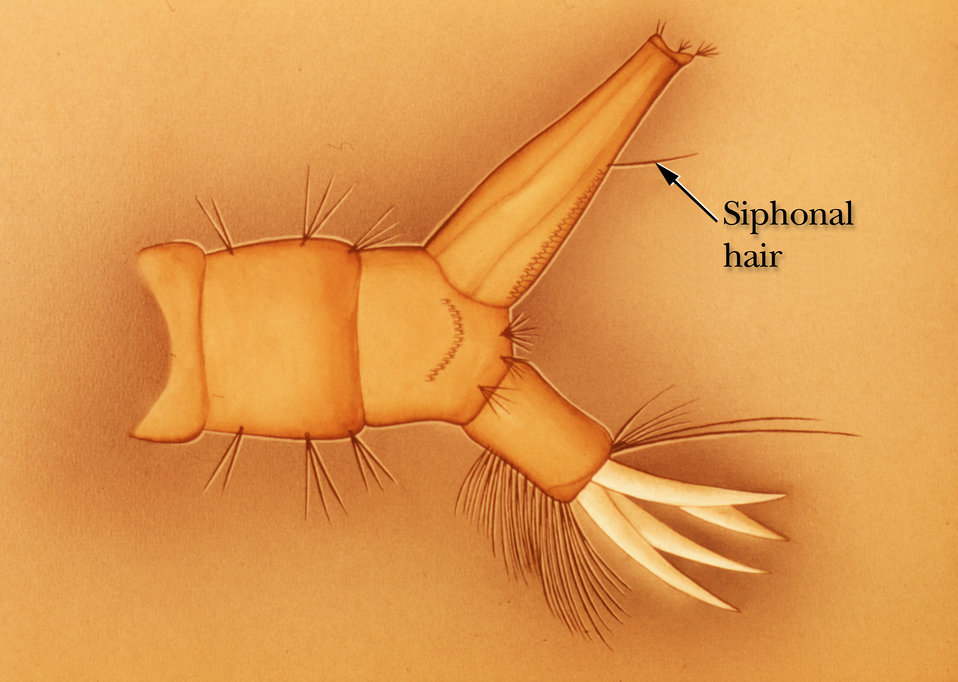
The terminal segment siphonal hairs of either the Aedes, Uranotaenia, or Psorophora mosquito larva.